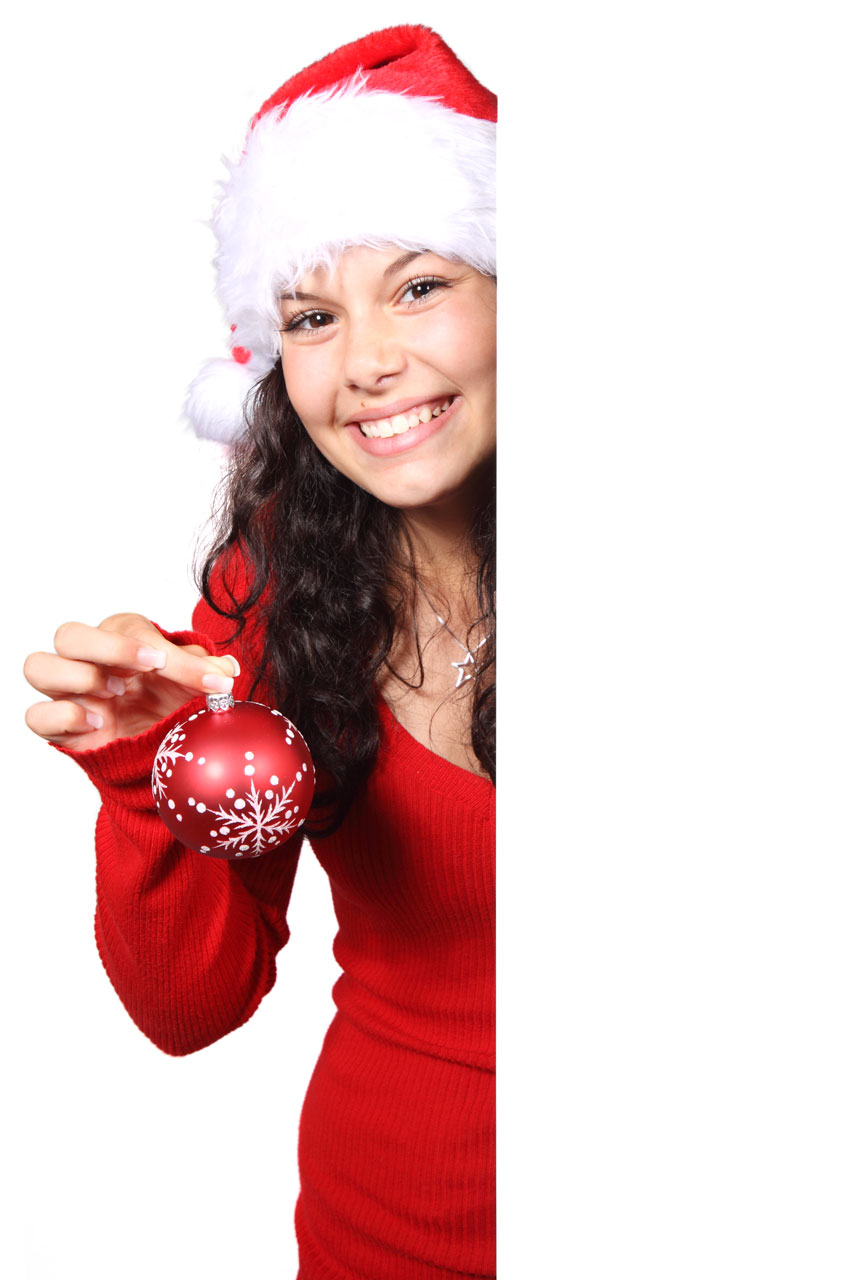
Santa with christmas bauble

Cute santa with red christmas bauble behind white board.